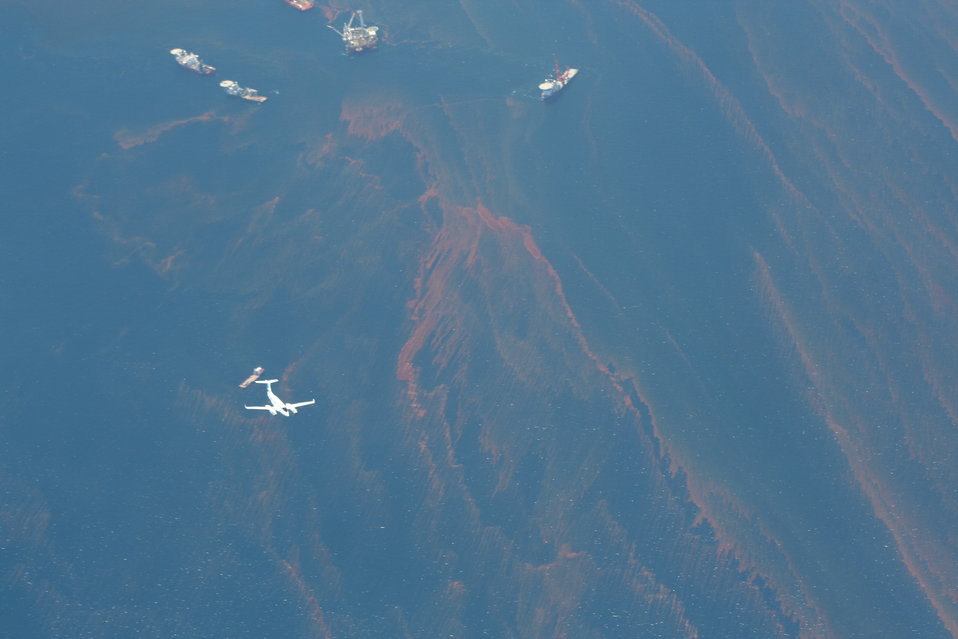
Flight 11 073